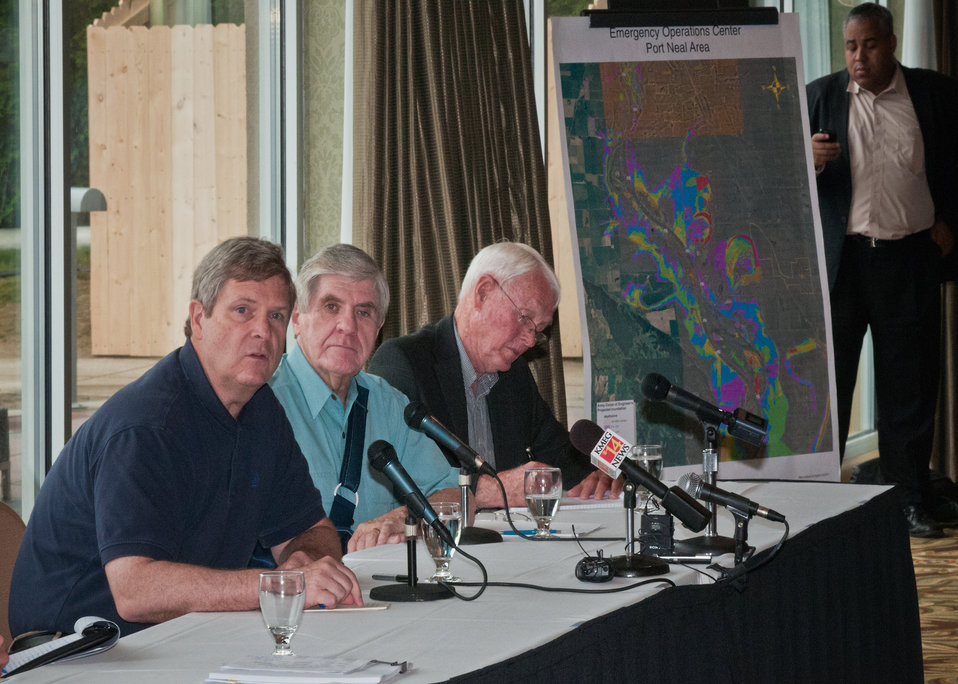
From left: Agriculture Secretary Tom Vilsack, Senator Ben Nelson, Nebraska, a member of the Senate Committee on Agriculture, Nutrition and Forestry and Dayle Williamson, State Agriculture Representative for Senator Nelson at a town hall meeting at the Marina Inn in South Sioux City, Nebraska Friday, June 17, 2011, on the floodwaters along the Missouri River affecting Iowa and Nebraska. The goal of the meeting with the producers and community leaders is to get a firsthand look and provide information back to Washington to better deliver disaster programs quickly to effectively respond to this disaster. The meeting provided the information necessary for USDA agencies to implement programs to assist producers as they assess recovery efforts. USDA administers many programs to assist with recovery in rural areas reeling from natural disasters.